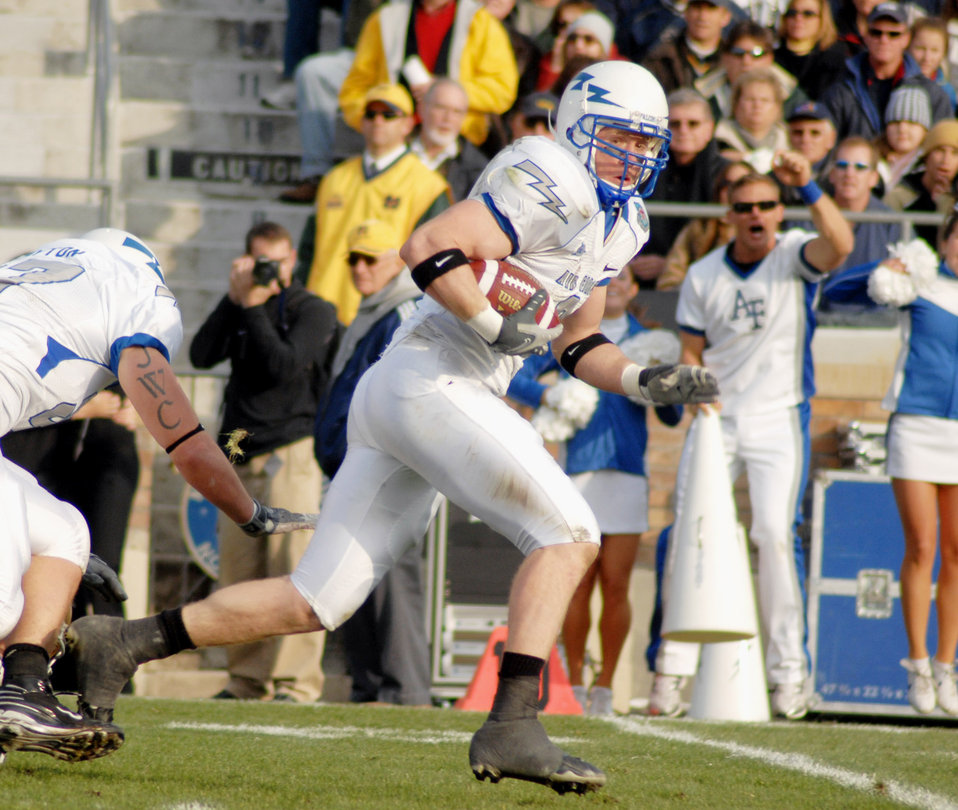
Football: Falcons outfight Irish, 41-24

U.S. Air Force Academy Falcons outside linebacker John Rabold runs back a Notre Dame fumble for a touchdown in the the Air Force Academy's 41-24 rout of the Irish Nov. 10 at Notre Dame Stadium in Indiana.